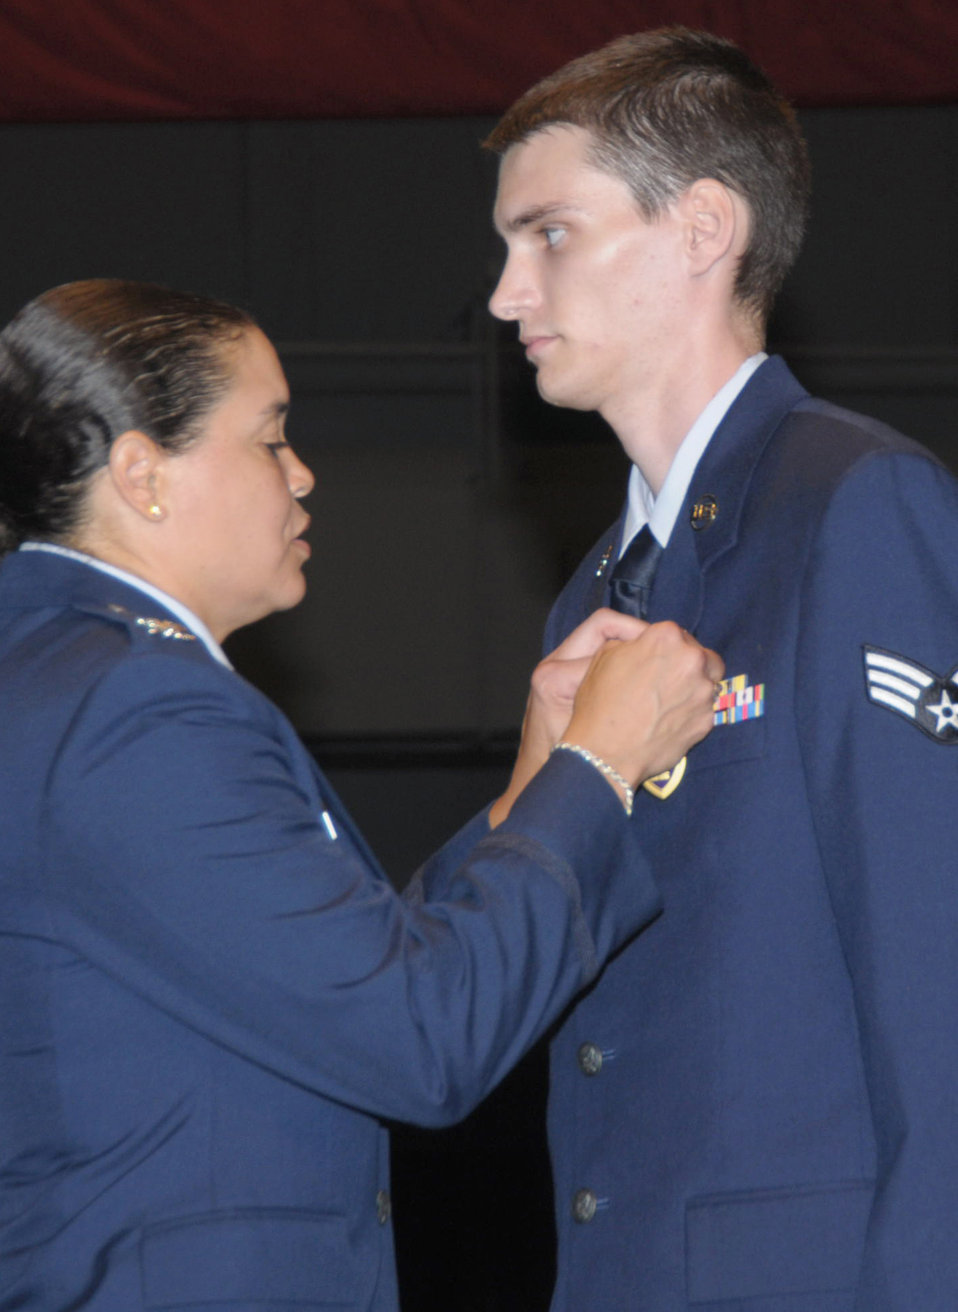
Porfirio

Col. Amanda Gladney pins a Purple Heart on the chest of Senior Airman Tre Porfirio July 8, 2010, at the National Museum of the U.S. Air Force in Dayton, Ohio, during the 15th Heroes Welcoming Heroes event. Airman Porfirio passed away Nov. 28, 2010, while visiting friends. Airman Porfirio was a voice network systems technician with the 88th Communication Squadron. Colonel Gladney is the 88th ABW commander.